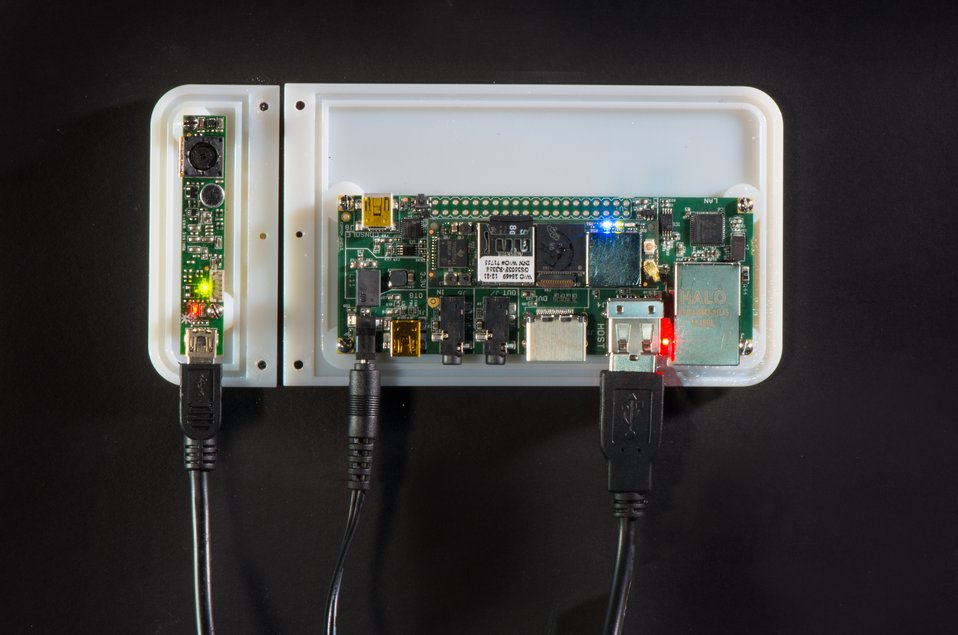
Inside view of the computer in the Image Processing Occupancy Sensor (IPOS) at National Renewable Energy Laboratory.

The sensor is based on commercially available embedded hardware widely used by the smart phones industry, leverages mature open-source computer vision software libraries, and uses modern software engineering techniques and firmware development technologies. The IPOS used a synergistic approach with face and people detection through computer vision algorithms.